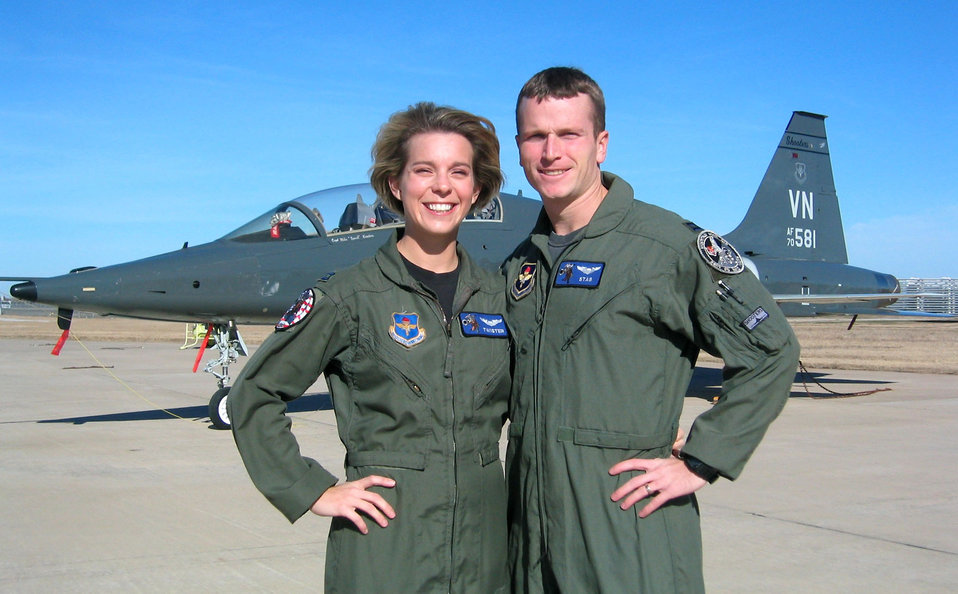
Vance couple selected to pilot B-2s

VANCE AIR FORCE BASE, Okla. (AFPN) -- Capts. Rob and Beth Makros, T-38 instructor pilots with the 25th Flying Training Squadron here, were recently selected for assignment to the 509th Bomb Wing at Whiteman Air Force Base, Mo., as B-2 Spirit bomber pilots.